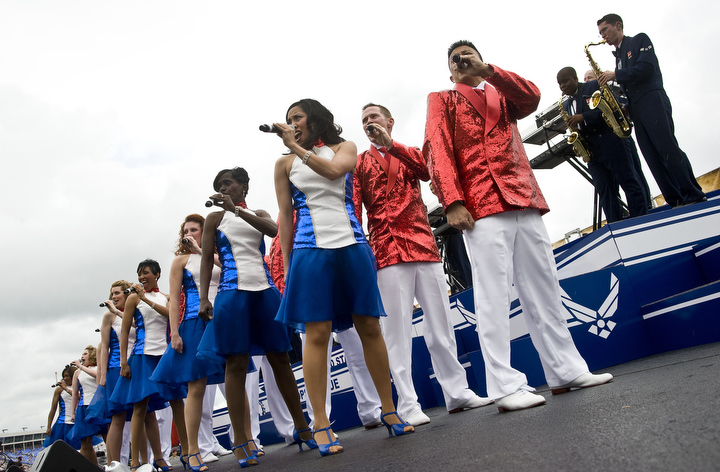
Coca-Cola 600

Tops in Blue the Air Force's premiere entertainment showcase preform before more than 100,00 NASCAR fans May 24 during a Salute to the Military during Memorial Day festivities at the Lowe's Motor Speedway Coca-Cola 600 Sprint Cup race, Charlotte, N.C.